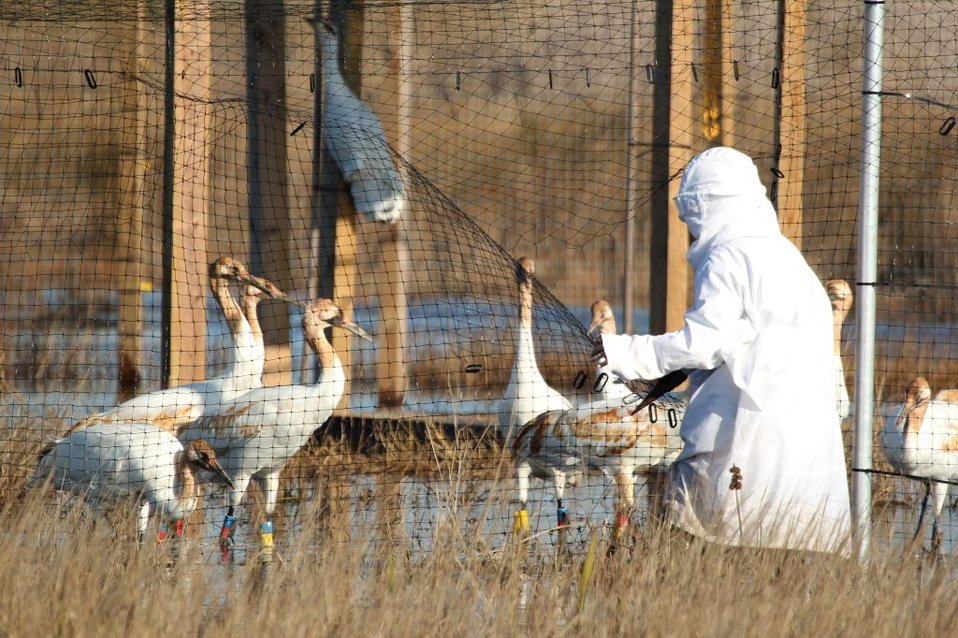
Sara Zimorski in Whooping Crane Costume

Sara Zimorski of the Louisiana Department of Wildlife and Fisheries dressed in a whooping crane costume, opening a section of fence in the top-netted pen to let the birds into an open pen.